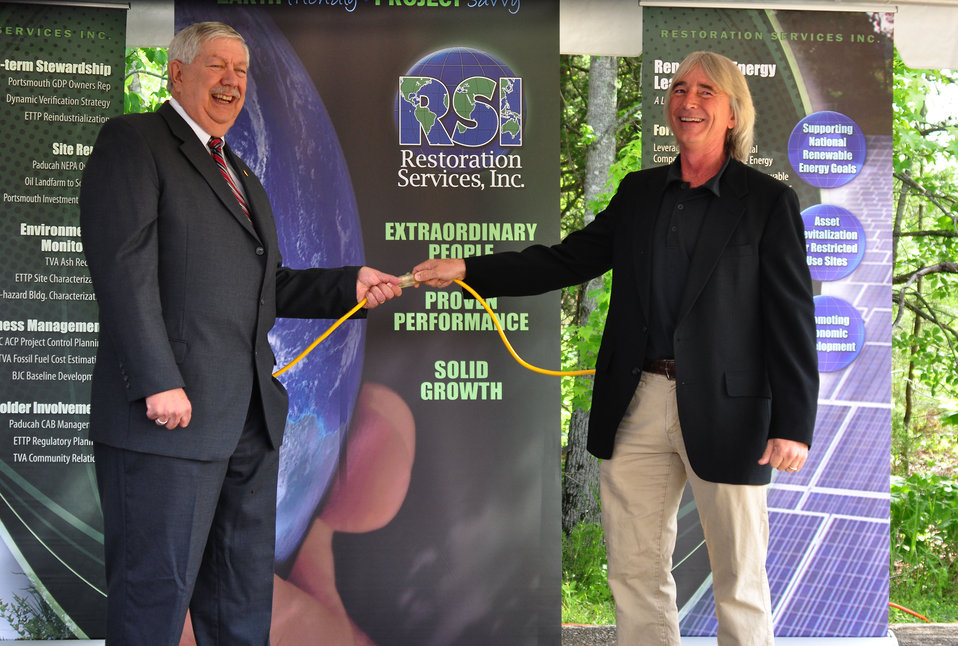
RSI Brightfield 1 solar array at East Tennessee Technology Park

12-086-229 DOE photo by Lynn Freeny
RSI Brightfield 1 solar array opening with Mayor of Oak Ridge Tom Beehan and RSI Vice President Rick Ferguson at East Tennessee Technology Park Oak Ridge Tennessee 5/15/2012